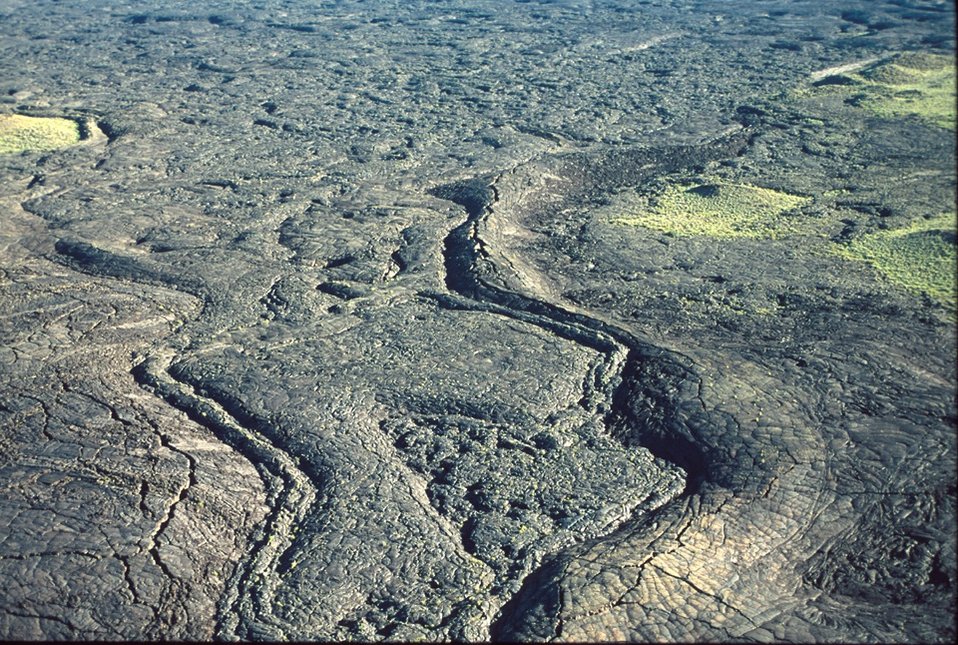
Craters of the Moon National Monument Shoshone Field Office USRD Upper Snake River District